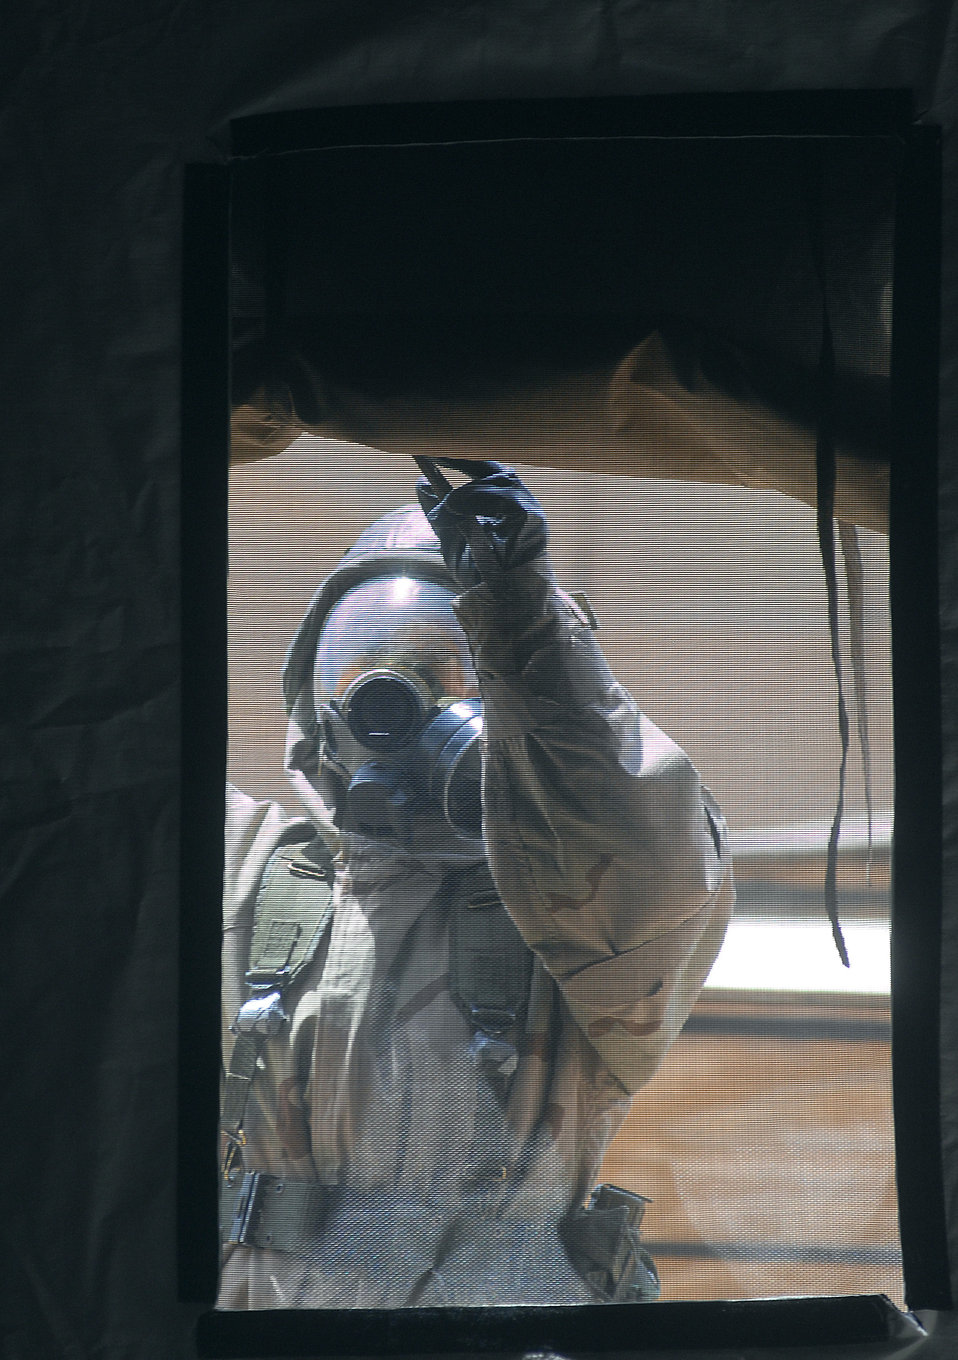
Global Engagement

Cadet Selena Roots rolls up a tent flap after a